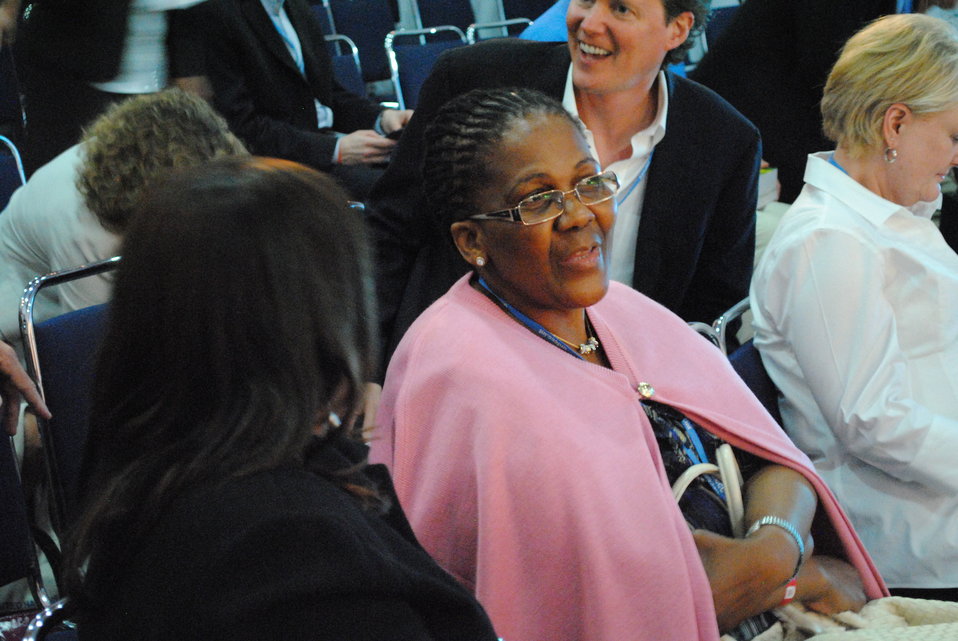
The South African Energy Minister Peters Watches Secretary Chu

The South African Minister of Energy Dipuo Peters watches U.S. Secretary of Energy Steven Chu present at the U.S. Center at COP-16 in Cancun, Mexico, on December 6, 2010.